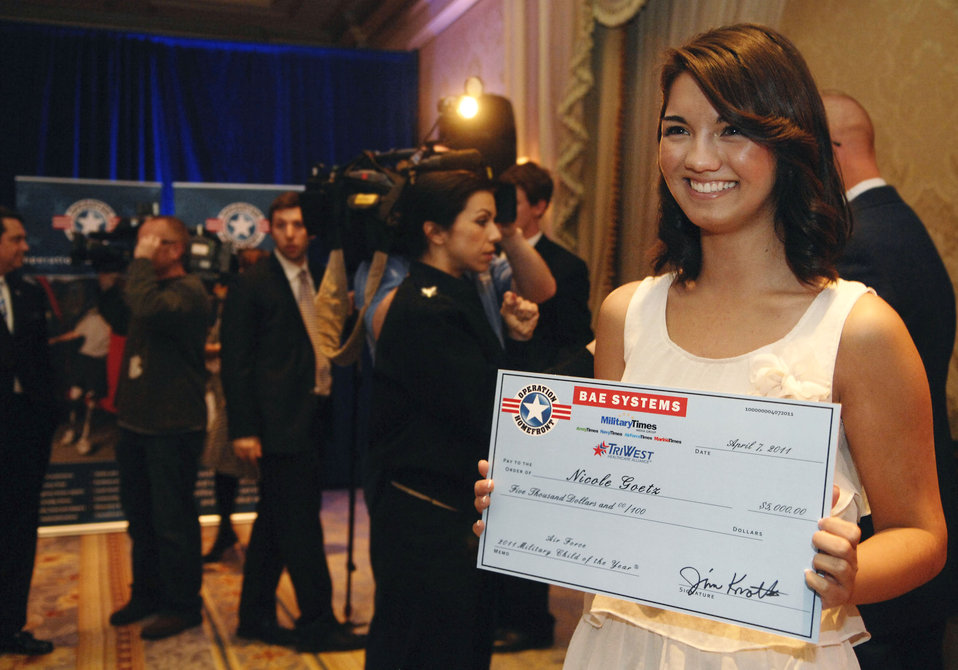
Nicole Goetz, of Tyndall Air Force Base, Fla., holds up an oversized
check during Operation Homefront's 2011 Military Child of the Year award
ceremony April 7, 2011, in Arlington, Va. Ms. Goetz is the Air Force's
award recipient. She is the daughter of Chief Master Sgt. Michael Goetz, who traveled here from Afghanistan to see his daughter get her award in person. Ms. Goetz volunteered at the local youth center, her church, veterans and nursing homes, and joined a variety of high school clubs. She also organized 21 local schools to create and send hundreds of homemade
Christmas cards, cookies and care packages to troops overseas. A committee of active-duty service members, family readiness support assistants, teachers, military mothers and community members chose the award recipients. The winners received $5,000 and a trip to Washington for the ceremony.